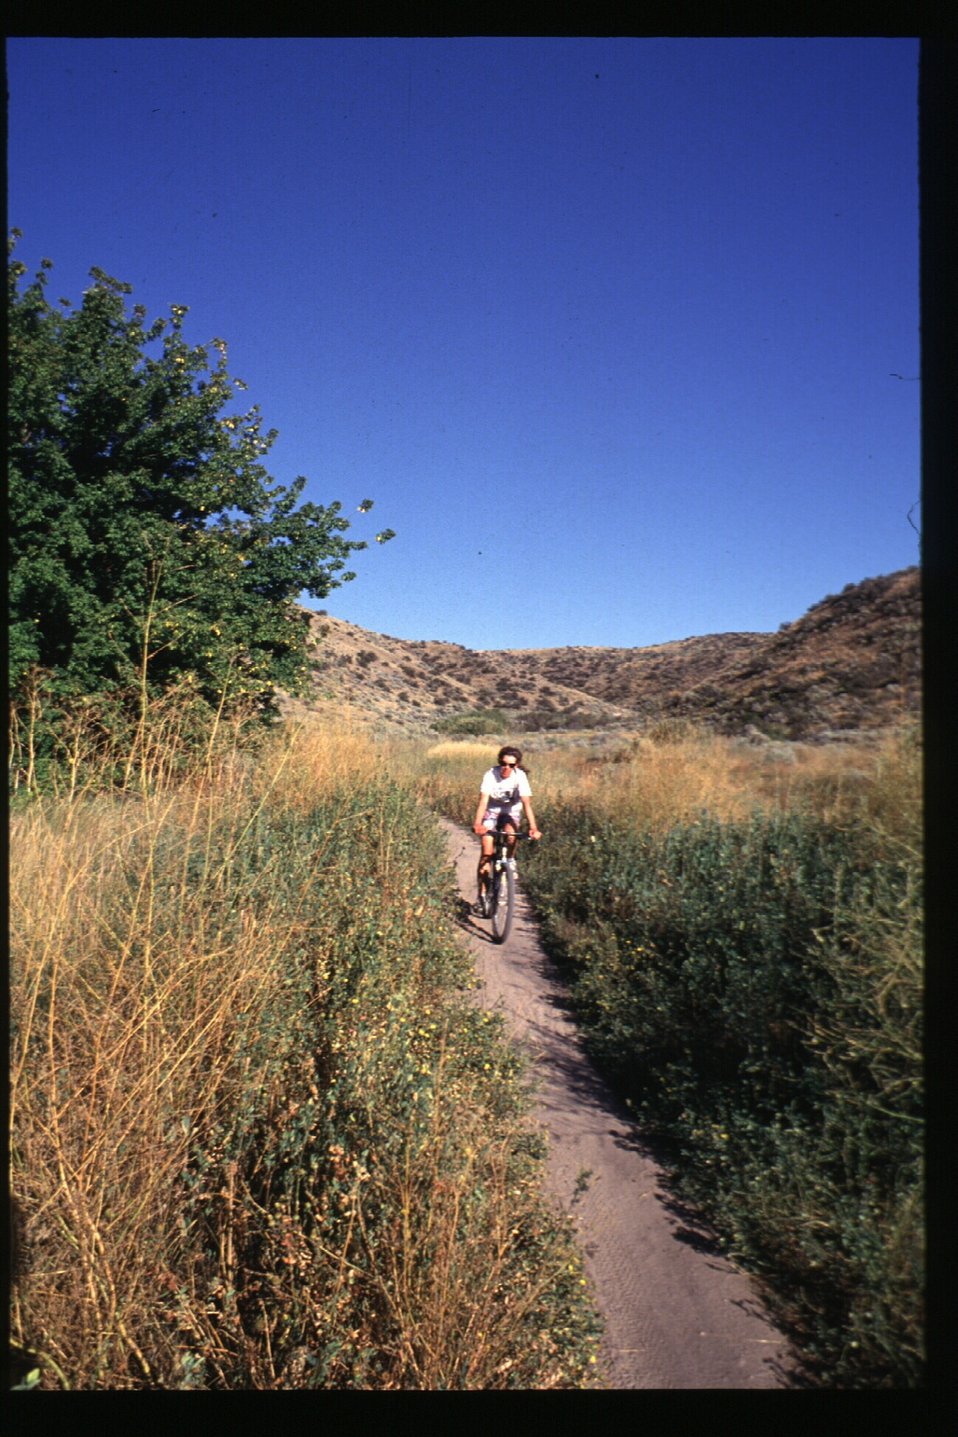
Biker in Boise Foothills Boise Front Four Rivers Field Office LSRD Lower Snake River District